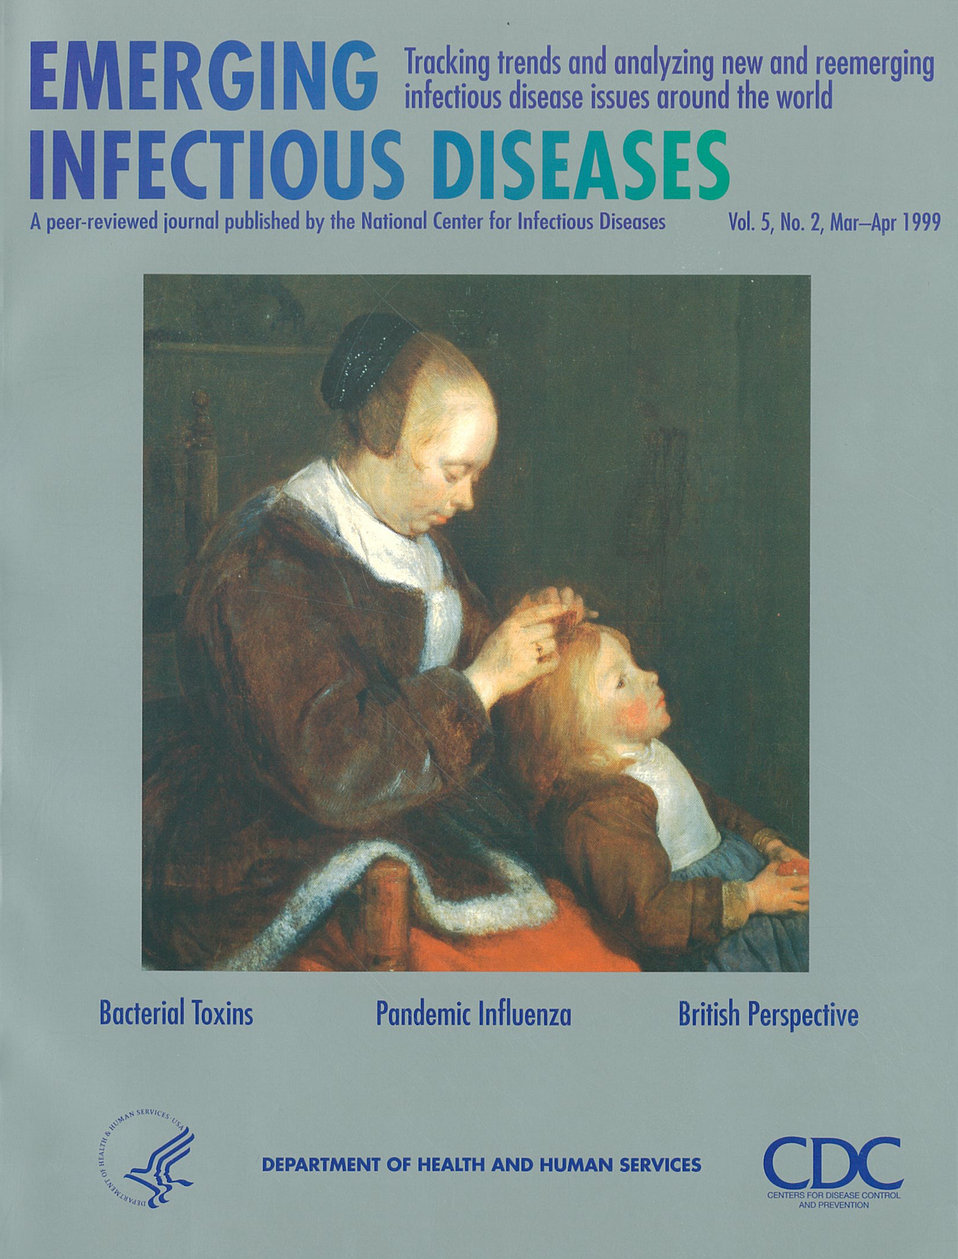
Emerging Infectious Diseases (EID) cover artwork for Volume 5, Number 2, March-April 1999 issue.